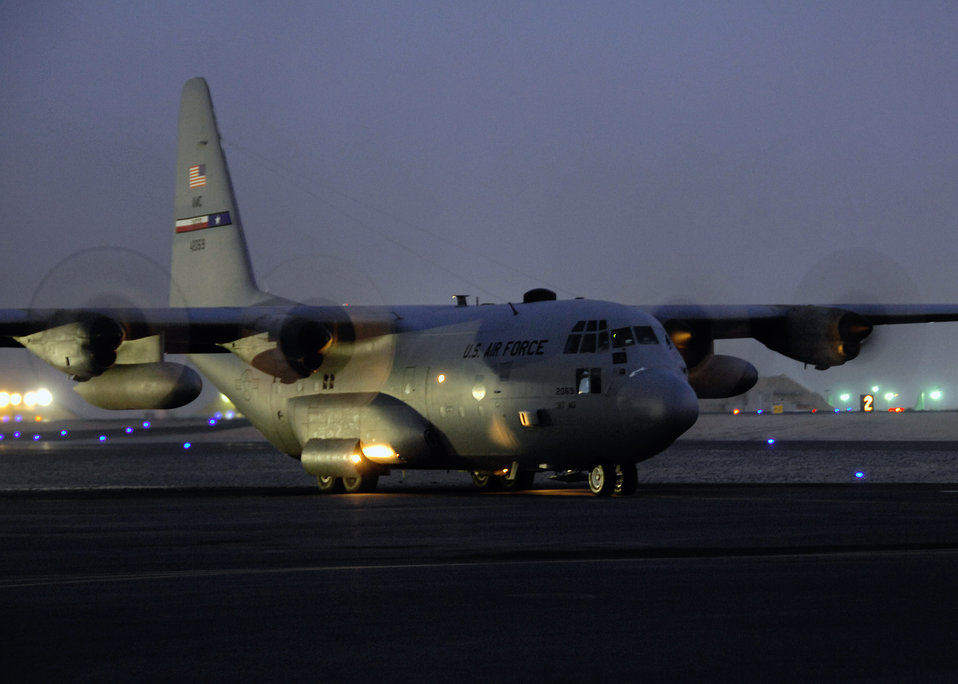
C-130s transport troops, cargo

A C-130 Hercules, assigned to a base in Southwest Asia, prepares to depart on a sortie to Iraq. The C-130 provides intra-theater heavy airlift, delivering tons of cargo and transporting passengers to include troop resupply in support of Operations Iraqi and Enduring Freedom.